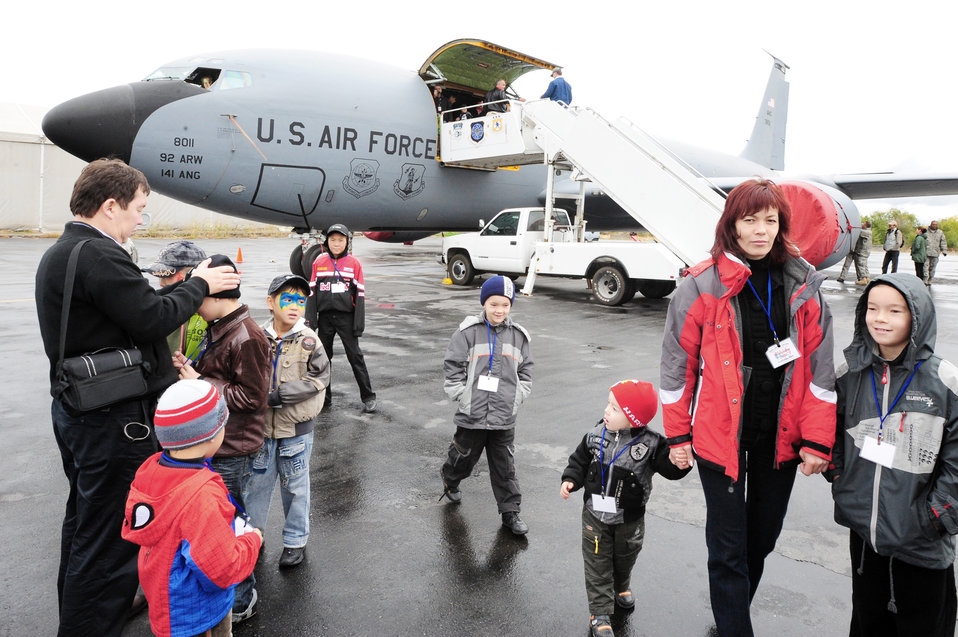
Airmen host Kyrgyz citizens during family day

A KC-135 Stratotanker is on display as part of Friends and Family Day Oct. 9, 2009, at the Transit Center at Manas, Kyrgyzstan. The event strengthened friendships between the U.S. military and the local community.